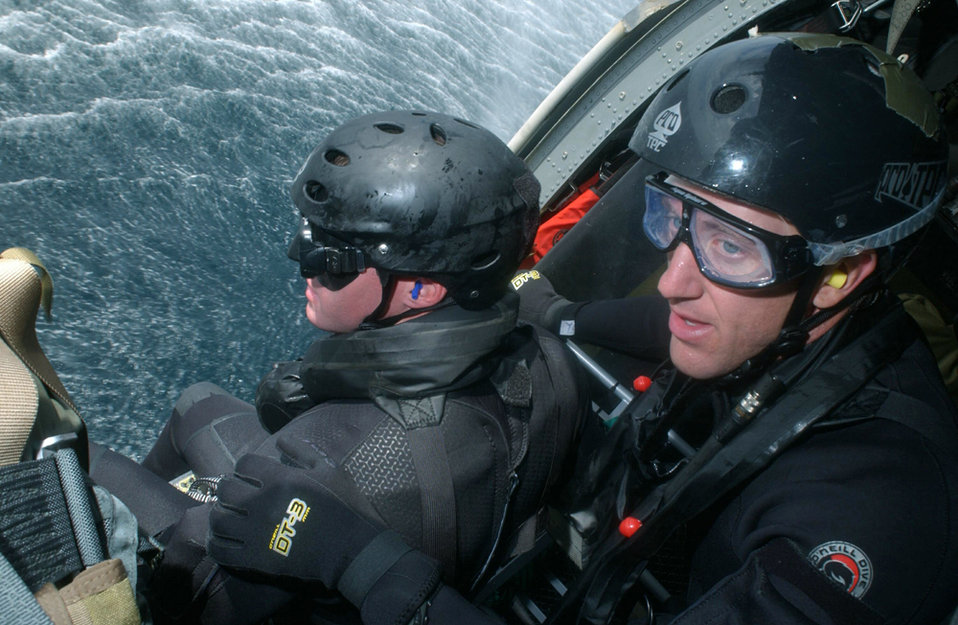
Water world

OVER THE PACIFIC OCEAN -- Senior Airmen Chris Albrandt and Skiy Detray prepare to jump into the water during rescue training Sept. 13 among the 55th, 79th and 48th Rescue Squadrons from Davis-Monthan Air Force Base, Ariz. Both Airmen are pararesuemen with the 48th RQS.